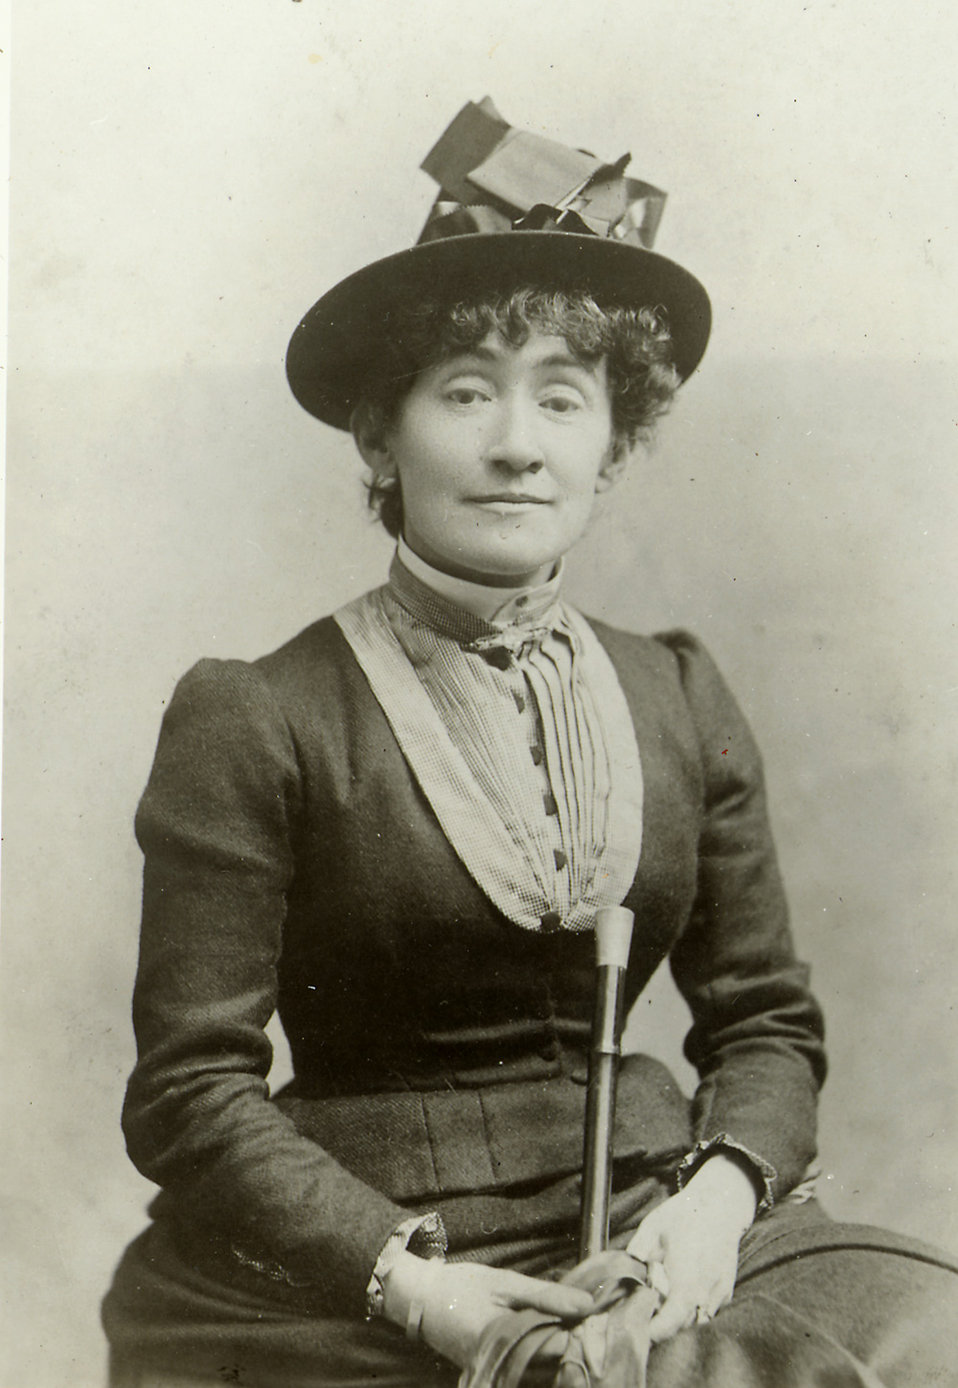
Blanche Nevin (1838-1925) - Women Artists

Sculptor, Marble statue of John P.G. Muhlenberg of Pennsylvania for the National Statuary Hall Collection.